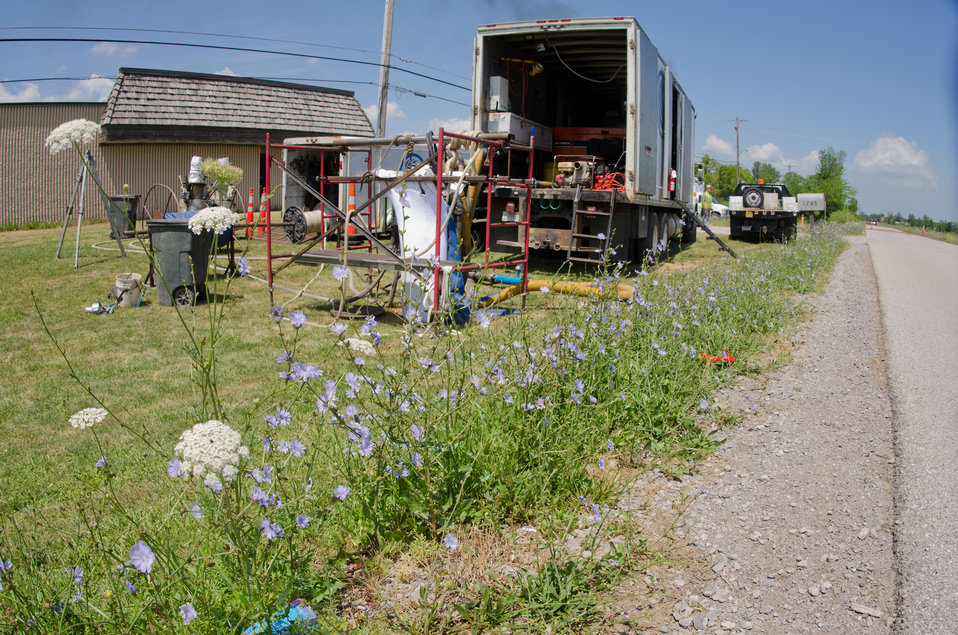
Gardens and roadways did not have to be dug up for the Buena Vista Township Phase II Sewer Project, in Michigan, where the United States Department of Agriculture funded the refurbishment and rehabilitation of 45,500 linear feet of defective sewer pipe, and more than 200 manholes; on Tuesday, July 19, 2011. The project includes the construction of an off-site excess flow basin; construction of a pump station; and improvements at the wastewater treatment plant. The system will serve 2,349 residential and 177 commercial customers and will bring the township into compliance with environmental regulations regarding pollutant discharges.
Inspections revealed that the 1960s sanitary sewer system had inflow from storm and rainwater systems and overflowed into the sanitary sewer system. Infiltration was found in the form of cracks, and other failures that allowed groundwater to enter. Rather than digging up the old system, rehabilitation with a cured-in-place-pipe (CIPP) method was chosen. This provides up to a 50% savings and the liner is projected to last 50-100 years. CIPP repair of the 8-30” diameter pipes involves pulling a resin-saturated fabric liner through a damaged pipe, which is then cured with steam or hot water to form a tight-fitting, joint less replacement pipe. Trenchless repair methods require less digging than traditional “dig and replace” repair methods and minimize damage to yards and landscaping. There are two of these teams and one manhole rehabilitation to seal the underground casting frame or brick structure. They process 600-800 feet per day.
Wade Trim Inc. Professional Engineer Tiffany Harrison said about working with the United States Department of Agriculture’s Rural Development “It was very easy, they make it very straight forward, in what paperwork they need. They were always available for questions.
USDA Rural Development has funded water and sewer projects in 117 Michigan communities serving more than 94,000 customers.
Senior Advisor to the Secretary of Agriculture Doug O’Brien said, “America will win the future by out-building, out-educating and out-innovating the world,” O'Brien said. “The Obama Administration is committed to the residents and business owners of Buena Vista Township in building the infrastructure needed to protect our environment and ensure clean water for future generations.” Being almost entirely surrounded by the Great Lakes, Michigan residents know that a small problem upstream usually leads to much bigger problems downstream and that the impact of water pollution extends far beyond the immediate community.